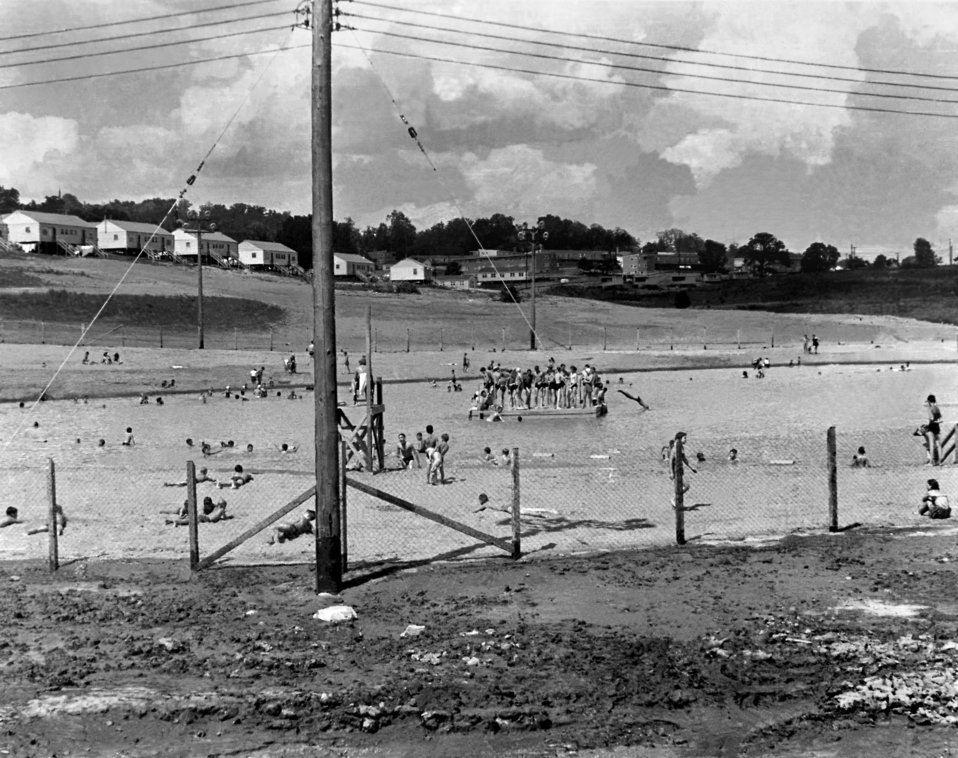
Oak Ridge Swimming Pool 1944

Roll292-35 DOE photo Ed Westcott 7-27-1944 Oak Ridge Tennessee